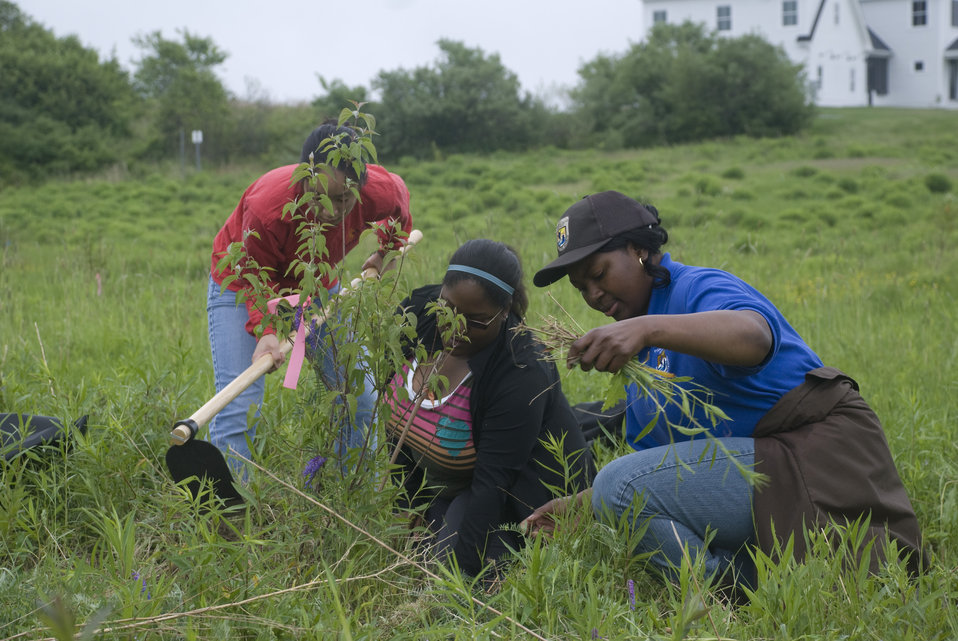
Rachel Carson Natl Wildlife Refuge, ME